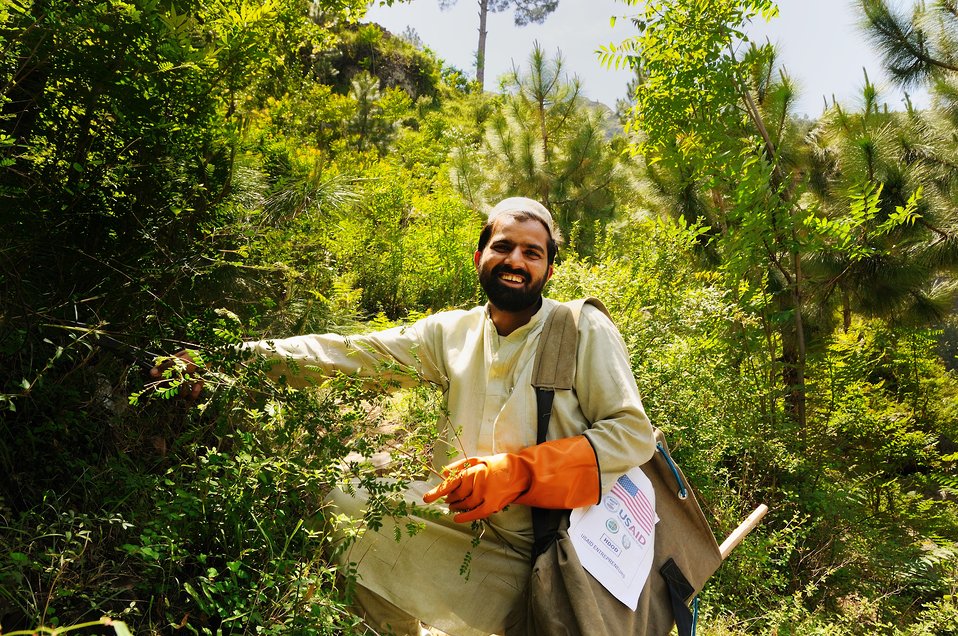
Of the greener pastures

Swat, May 22, 2012 - Entrepreneurs links medicinal plant collectors in Swat with a leading herbal industry to provide plant species worth more than PKR 300,000